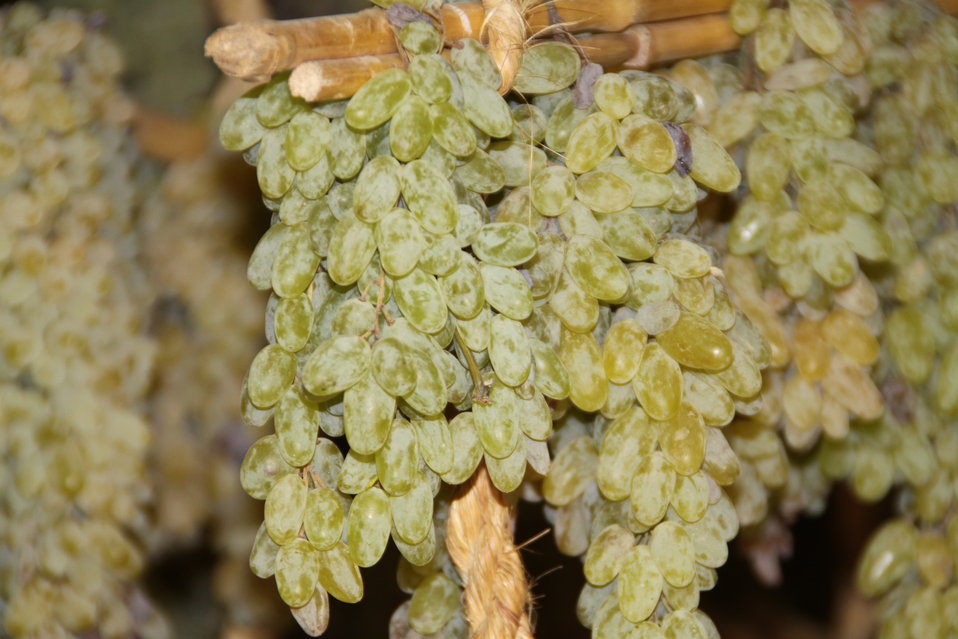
AVIPA Plus Wheat Seed Distribution 101005

US Ambassador Karl Eikenberry and USAID Acting Mission Director Kevin Brownawell joined the Minister of Agriculture, Irrigation and Livestock, H.E. Minister Mohammed Rahimi in signing a Memorandum of Understanding and distributing vouchers to area farmers for wheat and fertilizer.